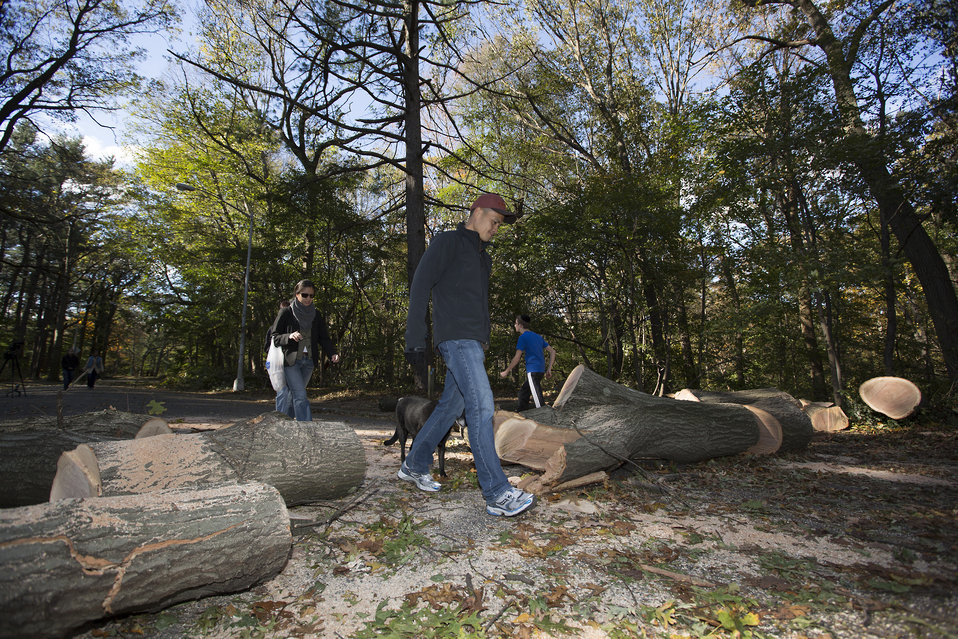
U.S. Forest Service (USFS) chain-saw crews made passage safe once again for New York City residents at Forest Park in Queens, NY on Nov. 4, 2012. Multiple USFS crews from across the country responded to assist in the wake of Hurricane Sandy.